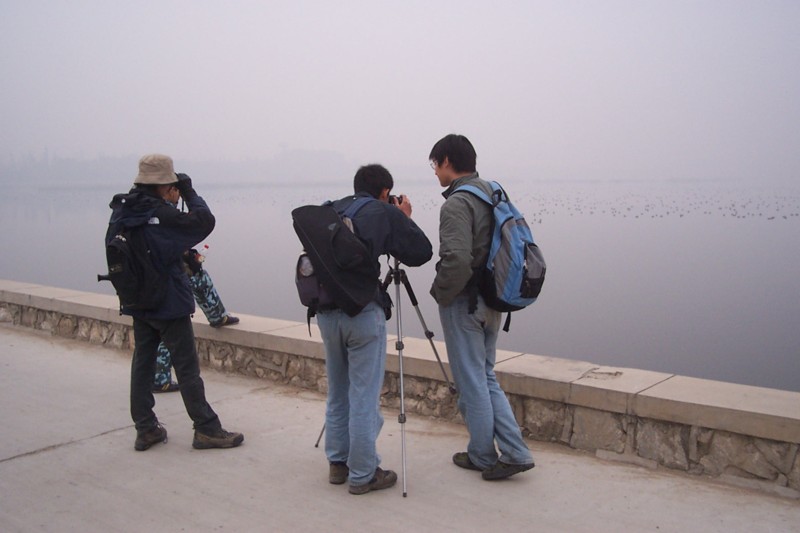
中国大陆的观鸟人，已è�·得æ�ˆæ�ƒ 图为æ�¥自北京高校的业余观鸟者在进行北京湿地鸟类å�Œ步调查，北京观鸟者有组织的水鸟调查开始äº�2003年秋季，由活跃在京åŸ�的业余观鸟人士组织和å�‚ä¸�，已为鸟类学研究æ�œ集到一定的有用数æ�® å�‚è§� 2004年秋季北京湿地鸟类å�Œ步调查åˆ�步结æ�œ æ‹�摄地点：沙河水库 版æ�ƒæ�ˆæ�ƒ文件： snowyowlså�‘短信问作者:'能ä¸�能æ�ˆæ�ƒ我把你在沙河å�š调查那张照片å�‘维基上' 他作者å›�å¤�:'æˆ�' 按以上æ�ˆæ�ƒ文件将这幅画定为：